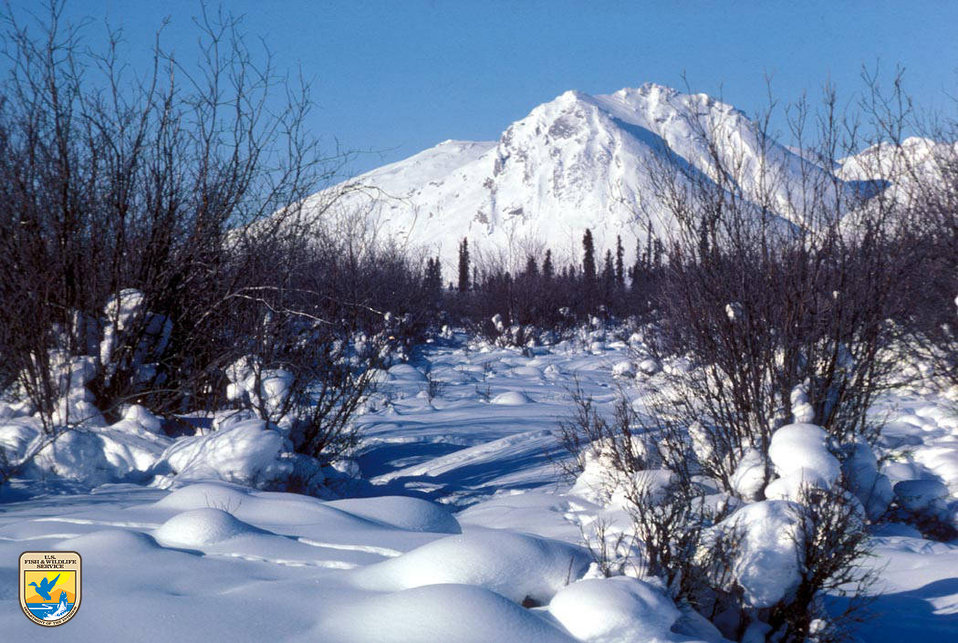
Arctic National Wildlife Refuge - winter scene